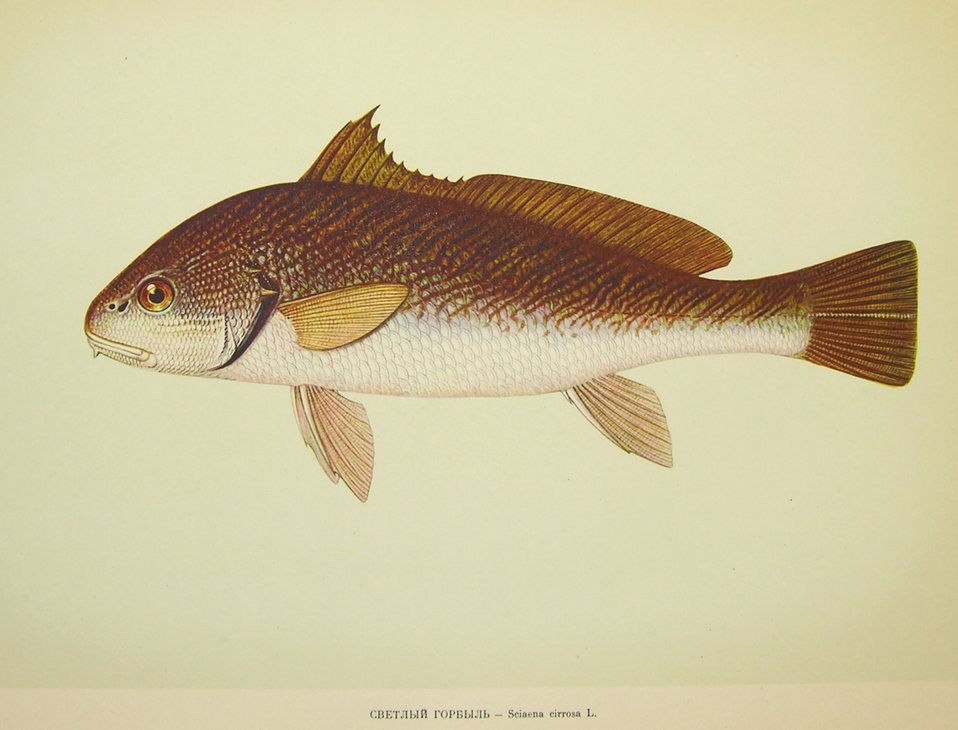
Plate 182. Sciaena cirrosa (L.). Family Sciaenidae. In: Fishery Resources of the USSR, N.N.Kondakov, Artist Editor. 1957. NOAA Central Library Call Number: SH91.R9 1957.